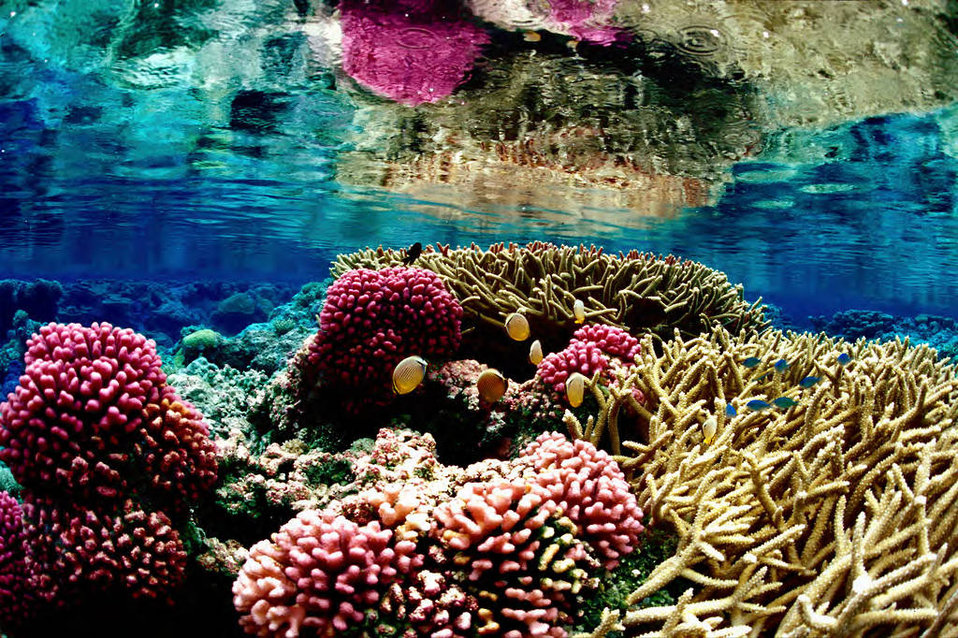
Coral Reef at Palmyra Atoll National Wildlife Refuge

Photo credit: USFWS/Jim Maragos

The absorption of atmospheric CO2 by the world’s oceans contributes to chemical reactions which ultimately reduce the amount of carbonate making it unavailable to coral to build their skeletons